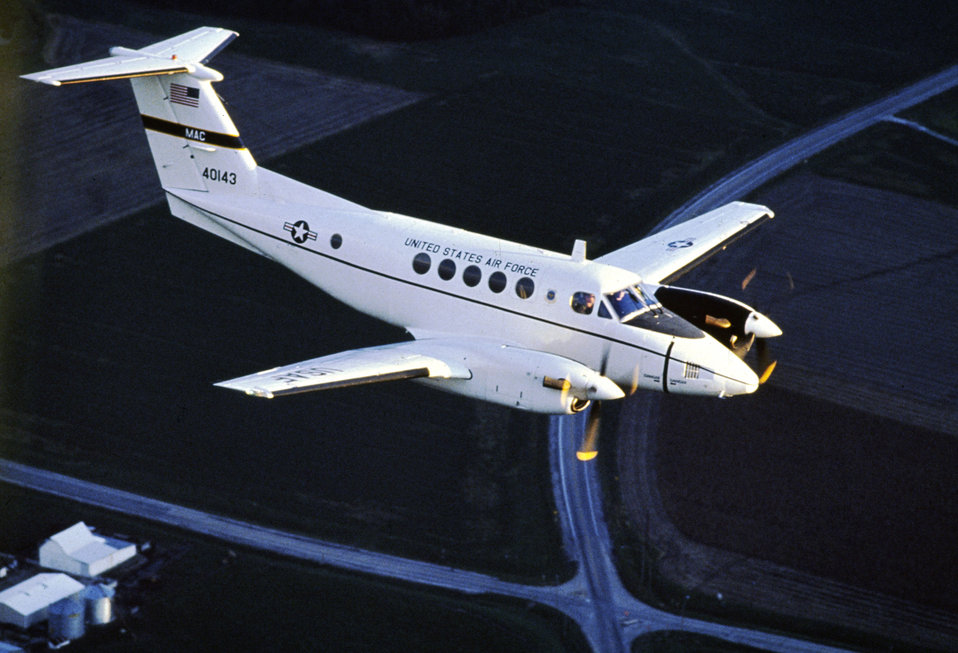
C-12 Huron